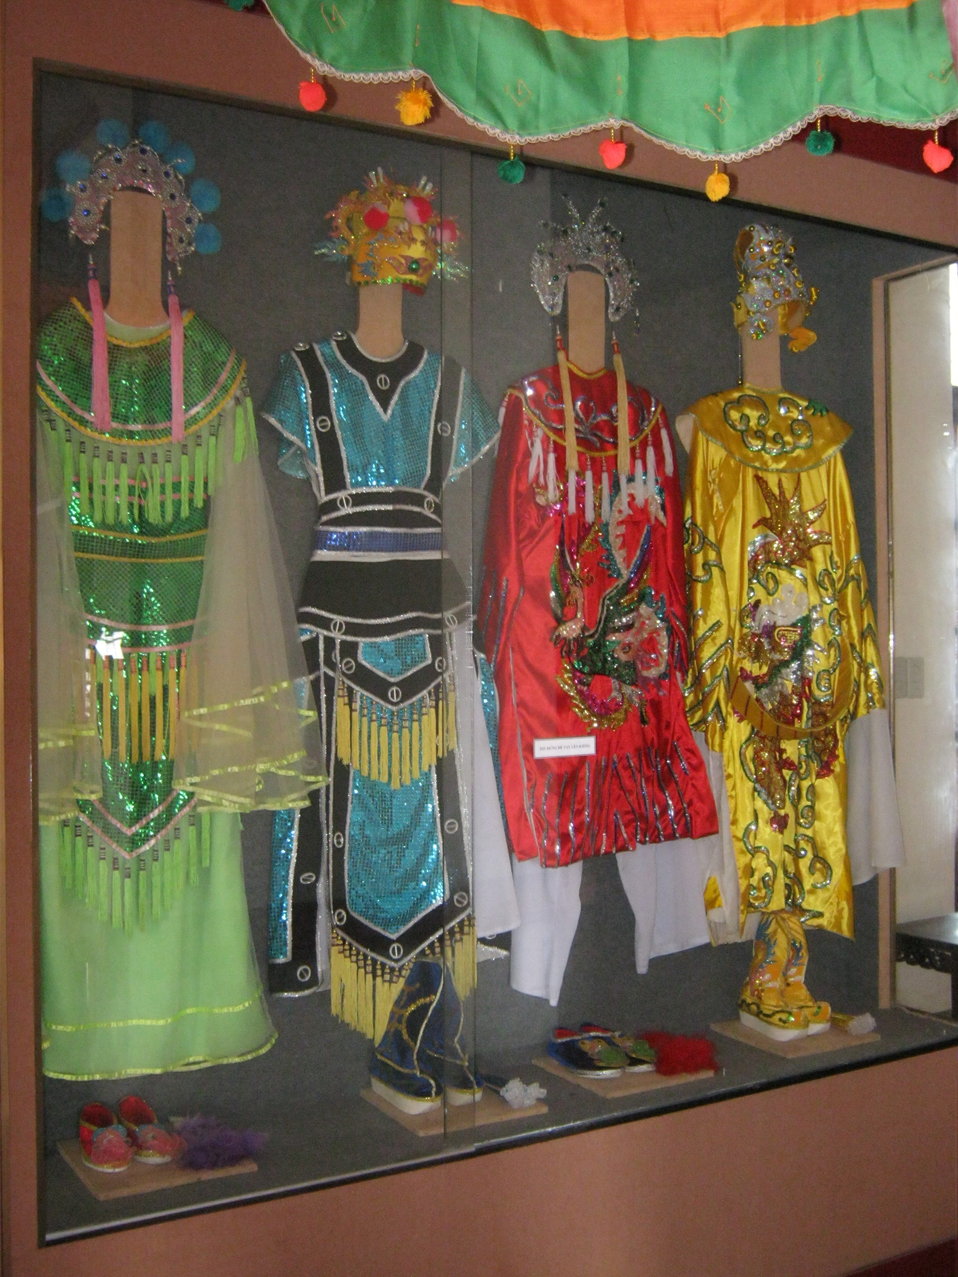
Tiếng Việt: Y phục dùng trong các vở diễn về tuồng tích xưa tại Việt Nam, hiện đang trưng bày tại Bảo tàng Vĩnh Long